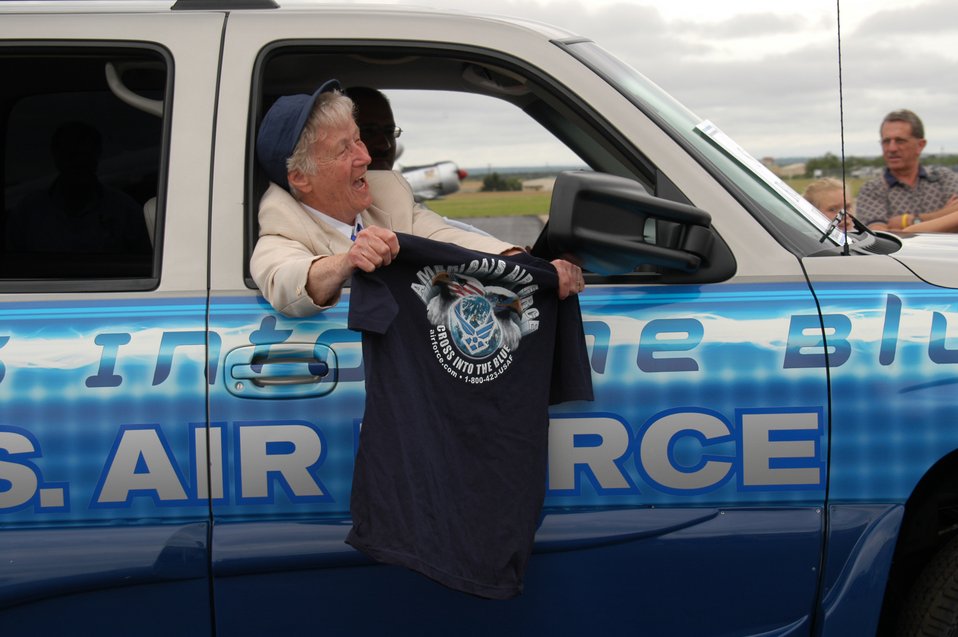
World War II women warriors pass on history, heritage

AVENGER FIELD, Texas -- Shutsy Reynolds, one of the Women's Airforce Service Pilots, waves an Air Force T-shirt and cheers as she rides in an Air Force recruiting vehicle during a parade at here. The parade was held in conjunction with the opening of the National WASP World War II Museum on May 28.